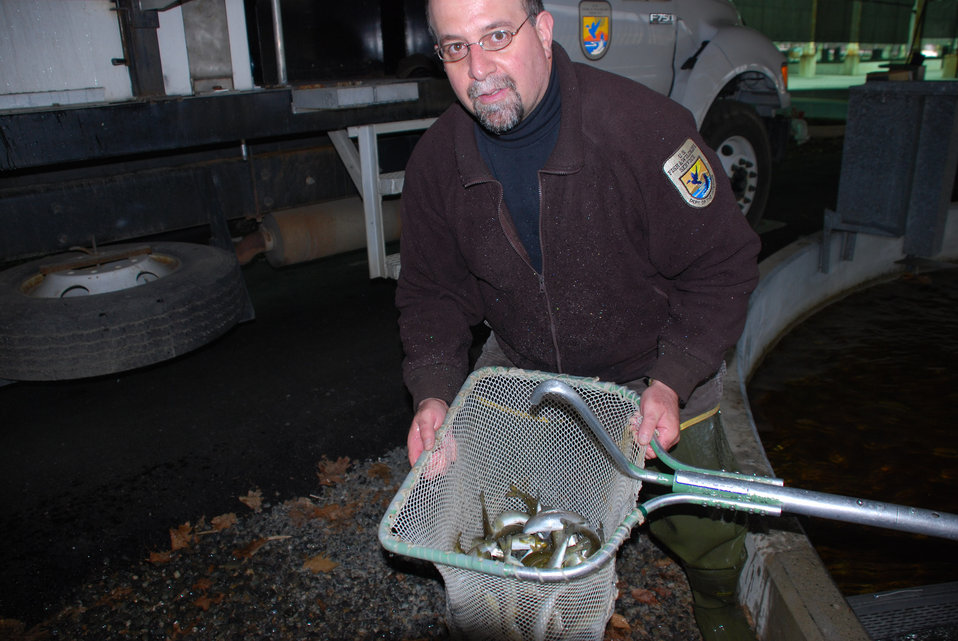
Keith Boyer with Netfull

Keith Boyer transfers a netfull of salmon from the holding pool to the distribution truck.